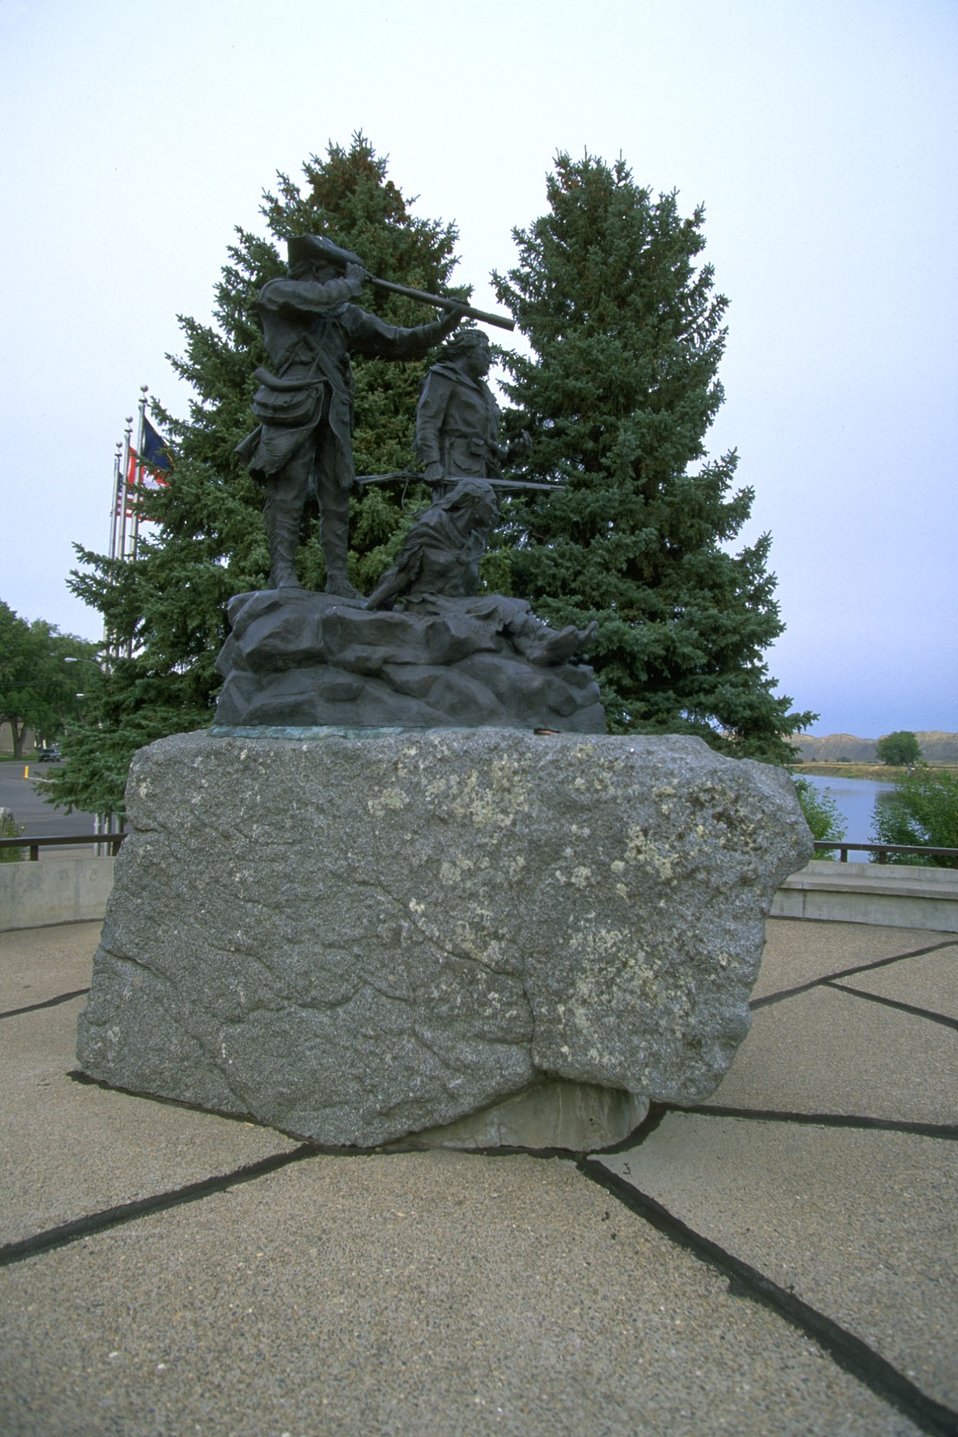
Lewis and Clark statue